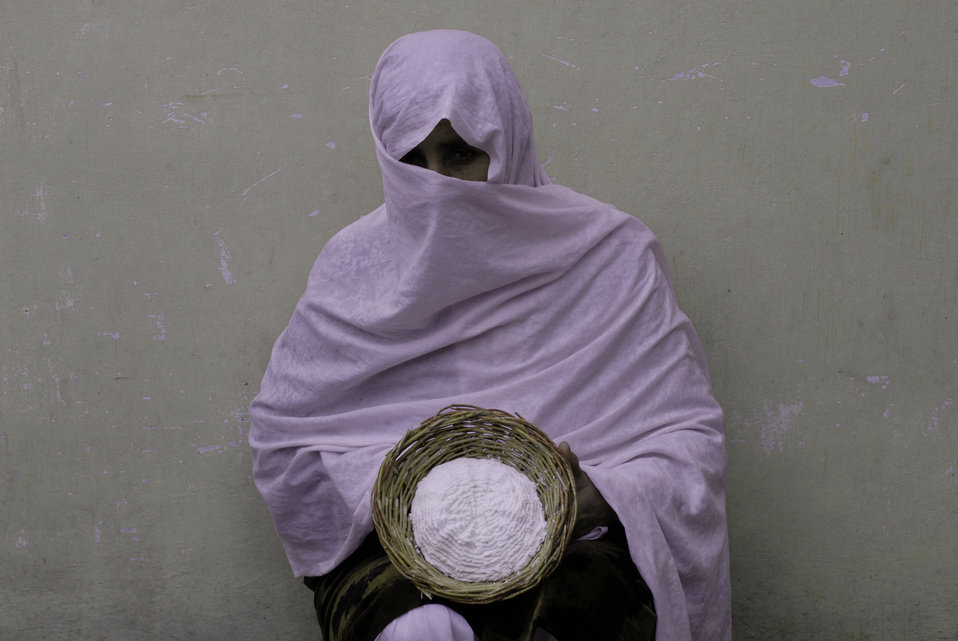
'On the Road' in Nangarhar Province